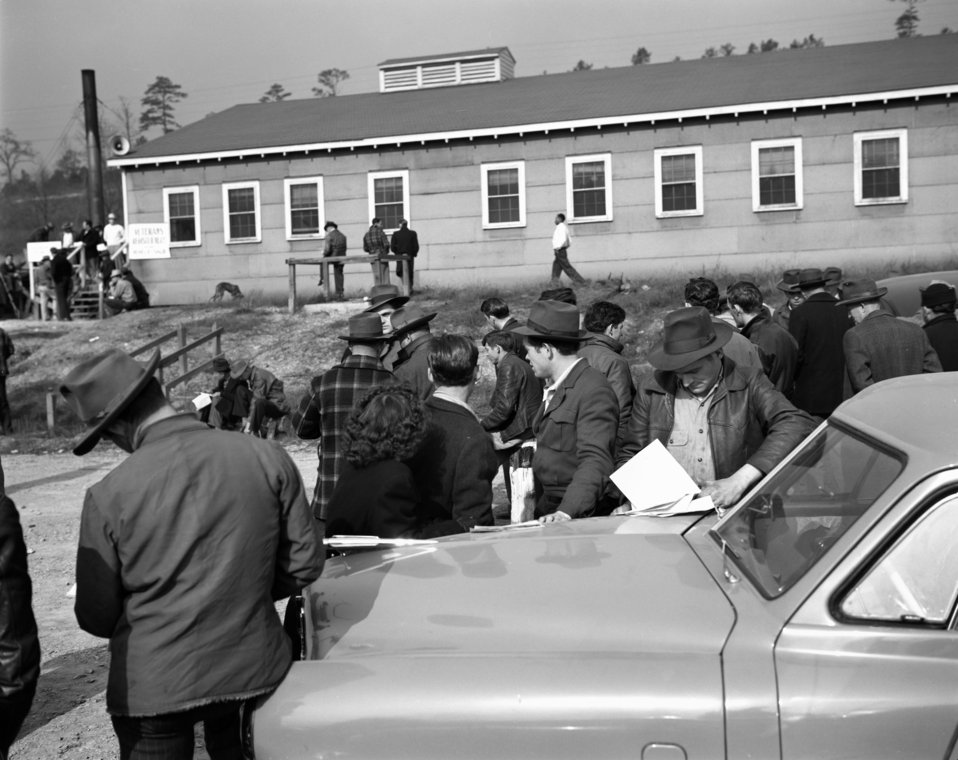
W.A.A. Auto Sale Oak Ridge 1947

3304-5e3 DOE photo Ed Westcott 2-18-1947 War Assets Administration Exclusive Sale for Vet of WW II Automotive Vehicles at Elza Gate Oak Ridge Tennessee